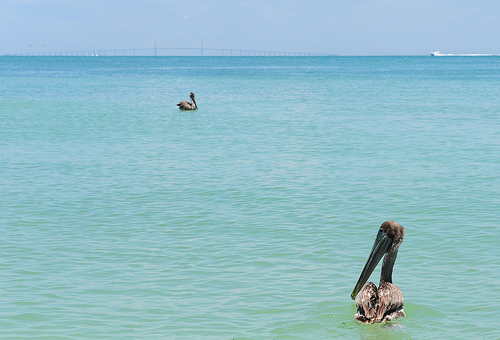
Two Brown Pelicans Released in Florida

ST. PETERSBURG, Fla. -- Two Brown Pelicans take a swim after being released at the Egmont Key National Wildlife Refuge near St. Petersburg May 30, 2010. The birds, along with four others, were transported to the Tampa Bay area aboard a Coast Guard HC-144A Ocean Sentry aircraft after being found oiled near Louisiana's coast and cleaned at Fort Jackson, La. U.S. Coast Guard photo by Petty Officer 3rd Class Nick Ameen.